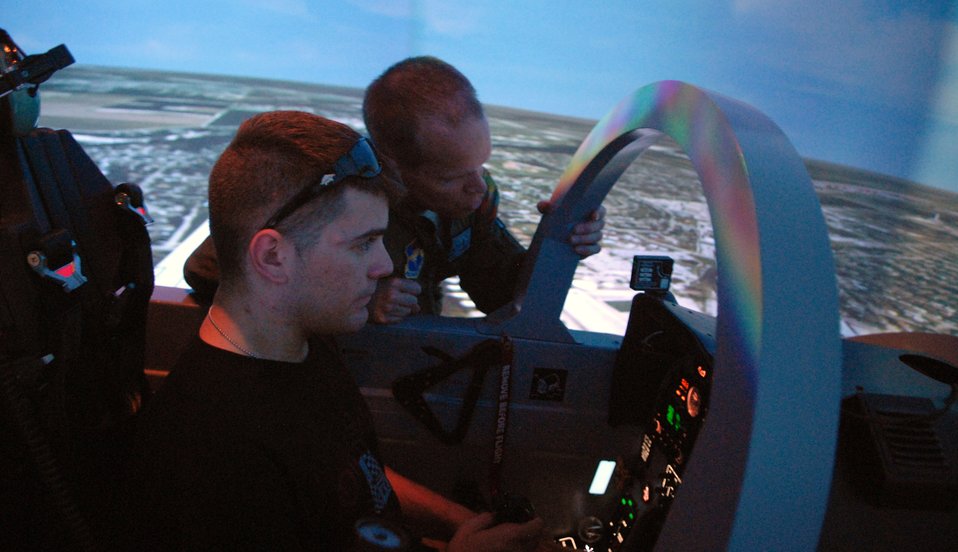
Wounded warriors tour Randolph

Matt Poirier mans the controls of a T-6A Texan II flight simulator during a June 27 tour of Randolph Air Force Base, Texas, June 27. Mr. Poirer, a wounded war veteran, and 12 other wounded warfighters recovering from serious injuries toured the base and flew a simulator at the 559th Flying Training Squadron. The wounded warriors are currently receiving care at the Center for the Intrepid at Brooke Army Medical Center in San Antonio.